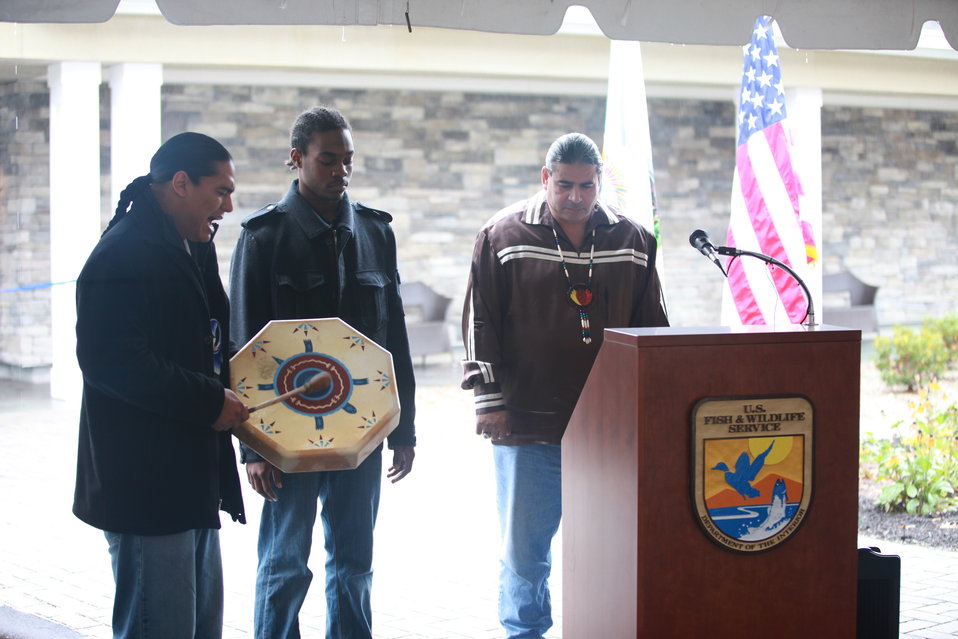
Traditional Tribal Blessing by reps. from Unkechaug & Shinnecock Indian Nations

A traditional blessing for the grand opening of the building is conducted by local members of the Unkechaug & Shinnecock Indian Nations. The ceremony concluded with a song of thanks, as seen in this picture.